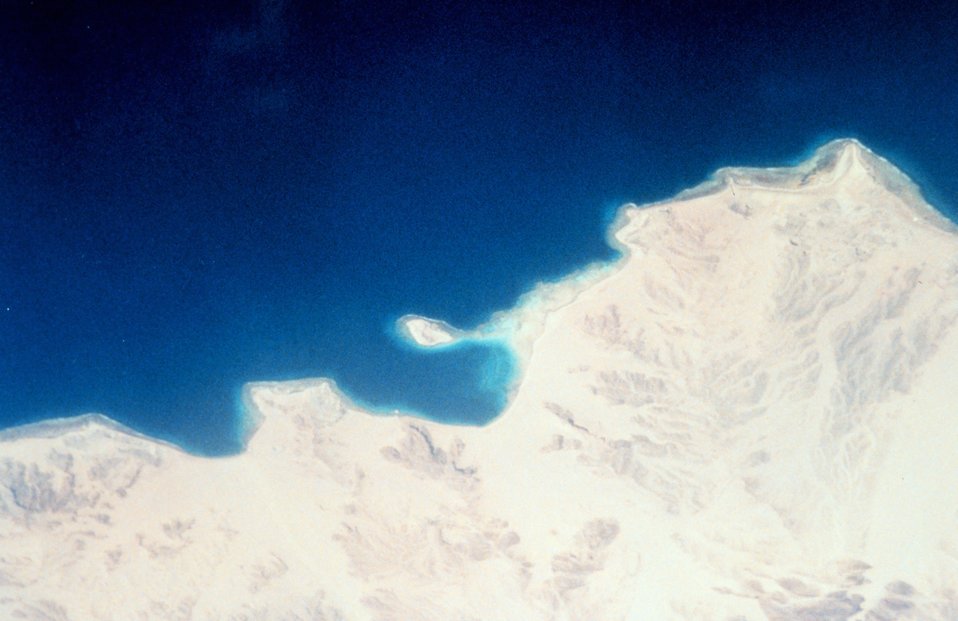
Sinai Desert shoreline on the Gulf of Aqaba